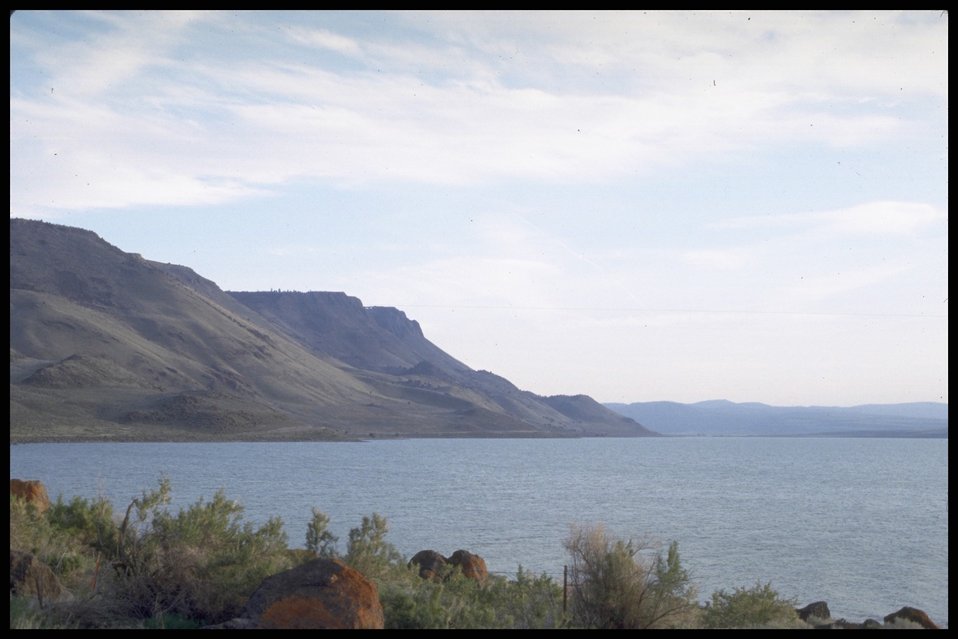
Scenic view of Lake Abert, Lakeview District.